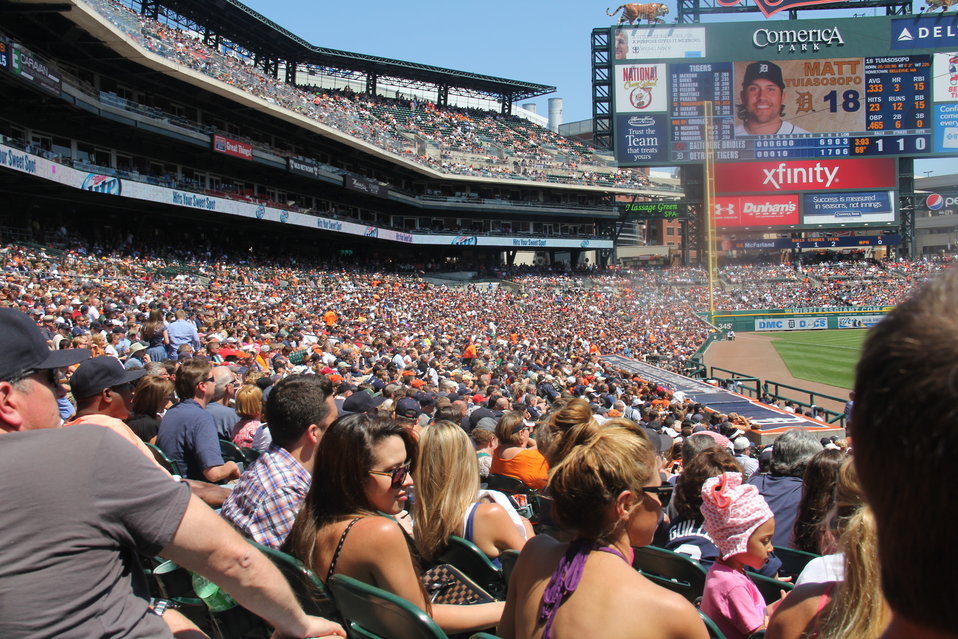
Tiger's Stadium